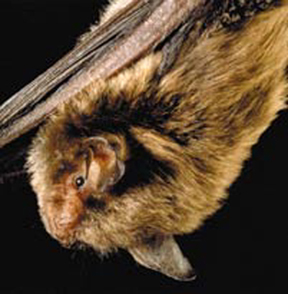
Close-up of a bat.